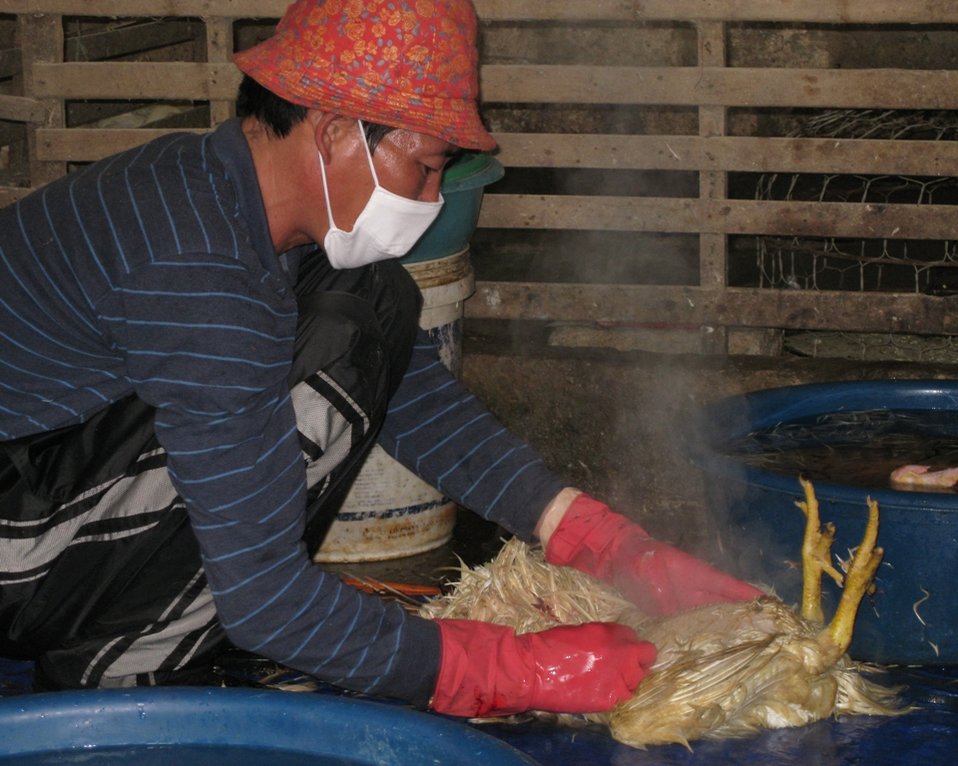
USAID fights infection and the spread of animal and pandemic influenza in Vietnam.

USAID works with poultry farmers and workers around the country to help curb the spread of bird flu.